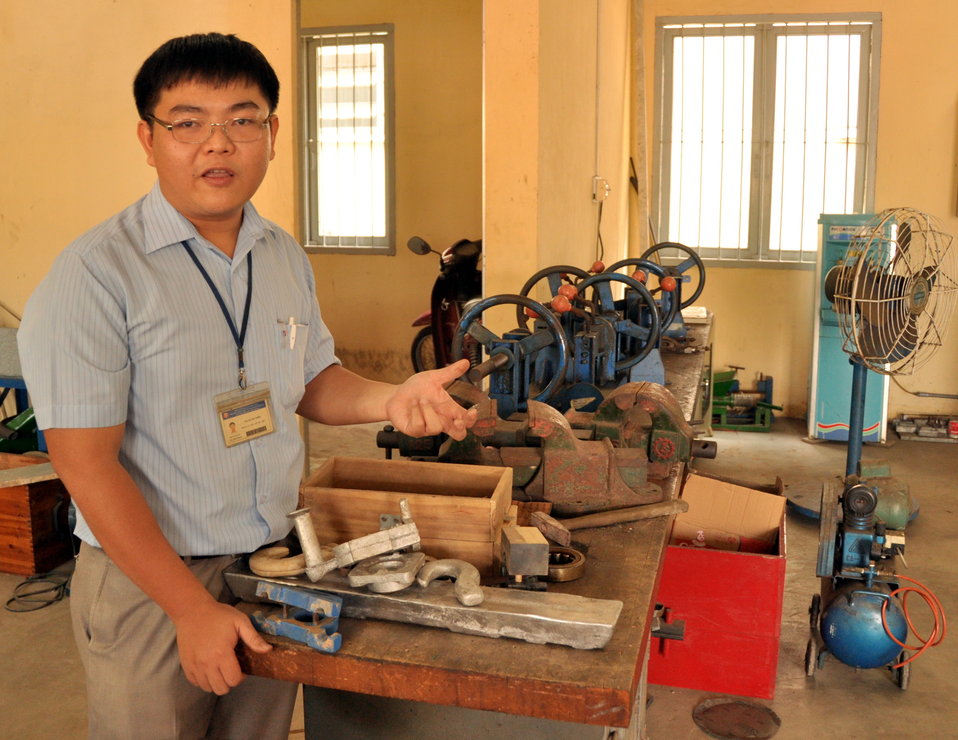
Ho Chi Minh City University of Technical Education, HEEAP Partner

Lecturer Vo Xuan Tien
January 12, 2013